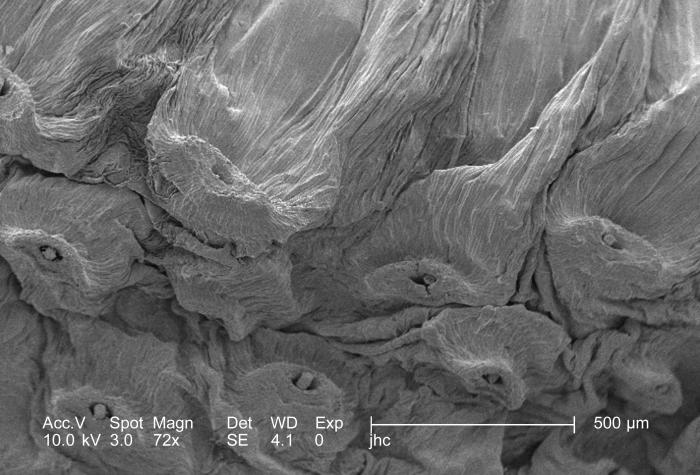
Under a low magnification of 72x, this 2006 scanning electron micrograph (SEM) depicted details of the morphologic surface characteristics of a "dandelion clock", from a Common Dandelion, Taraxacum officinale plant. The "clock" is the filamentous "puffball" of seeds arranged so as to be easily dispersed by the wind, or the breath of a curious child.In this field of view the remnants of the seed attachments are visible as small nubs protruding from a small papule. It is from these nub-like points that the "parachute"-equipped seeds detach, and are blown away, sometime over a distance of miles. Note that this is the first of a series of PHIL images, 8791-8796, in which the magnification is increased, thereby, providing greater and greater morphologic detail of the point of the developing seed attachments.